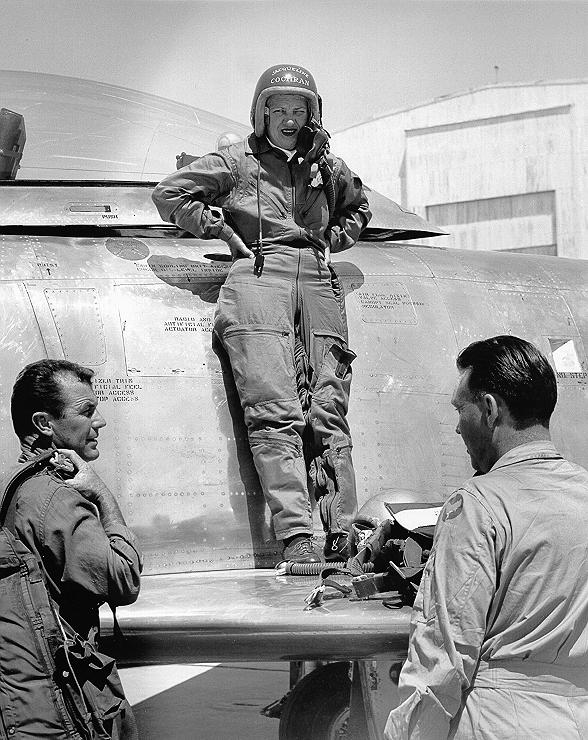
Jackie Cochran standing on the wing of her F-86 whilst talking to Chuck Yeager and Canadair's chief test pilot Bill Longhurst.